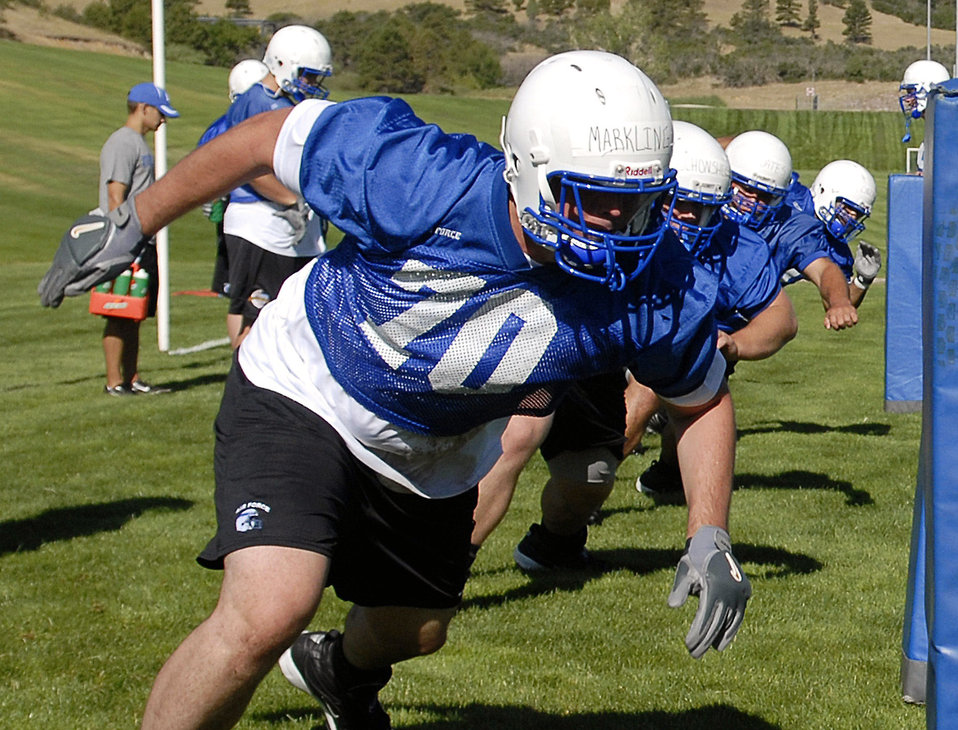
Getting ready for Southern Utah

Offensive tackle Cadet 3rd Class Matt Markling participates in drills as the Falcons practice in preseason camp July 31 at the U.S. Air Force Academy in Colorado. The Falcons had their best Mountain West Conference record in school history in 2007 with a 9-4 record.